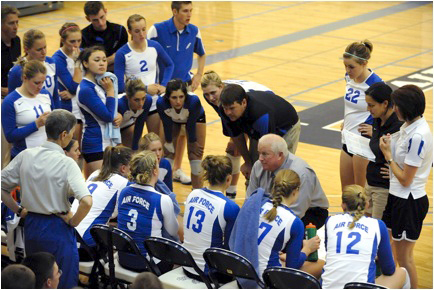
Cadet's show promise during women's volleyball tournament

Air Force Academy head volleyball coach Matt McShane talks to his team during a time out in the third set of the Falcon's match against Boise State University Aug. 27, 2010, at U.S. Air Force Academy in Colorado Springs, Colo. The Falcons fell to Boise State 1-3 with scores of 23-25, 18-25, 26-24, and 25-18.